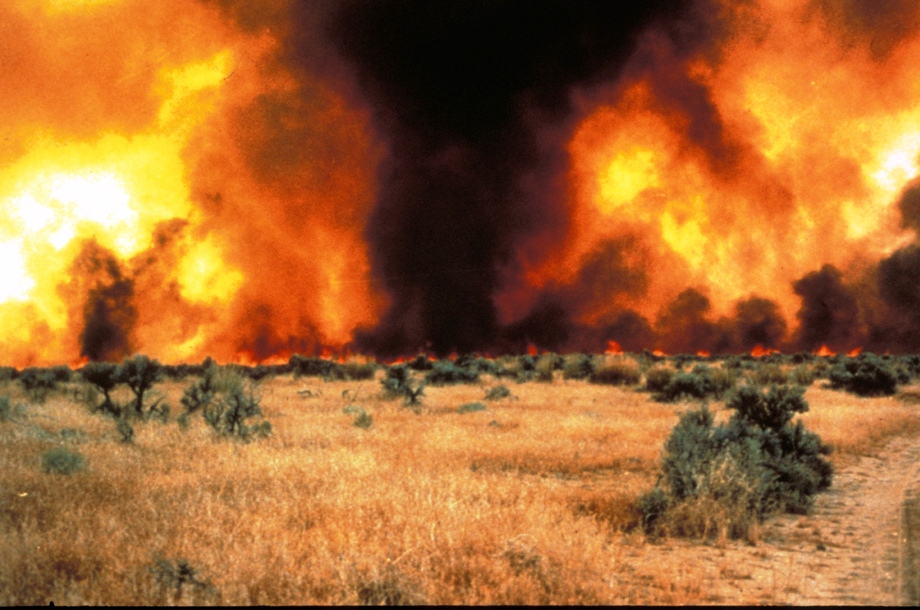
Idaho wildfire

A wildfire near Mountain Home, Idaho, burns sagebrush (black smoke) and cheatgrass (lighter colored smoke).